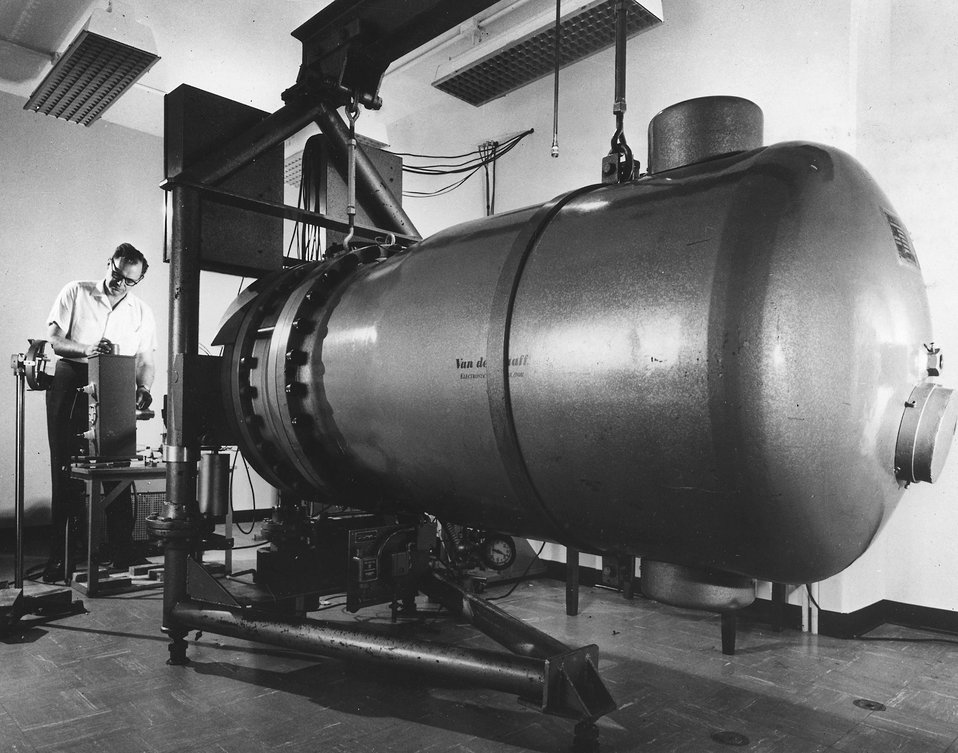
The two million volt Van de Graaff electron accelerator of the Brookhaven Chemistry Department has been modified for pulsed operation. c. 1967